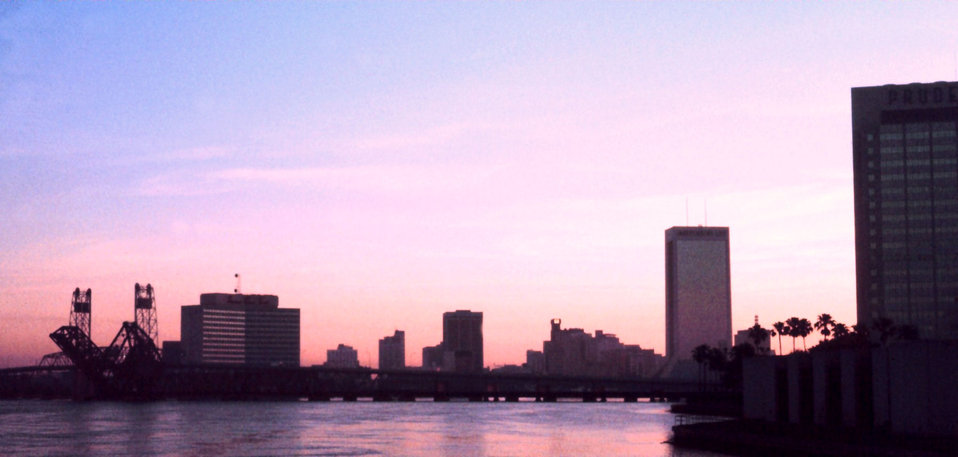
The Jacksonville waterfront